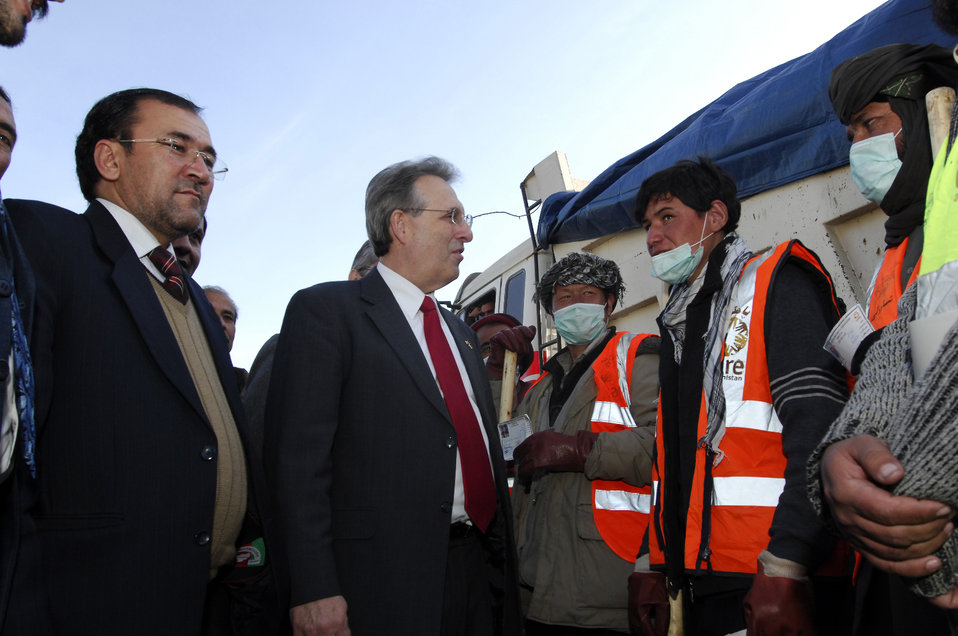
Care96